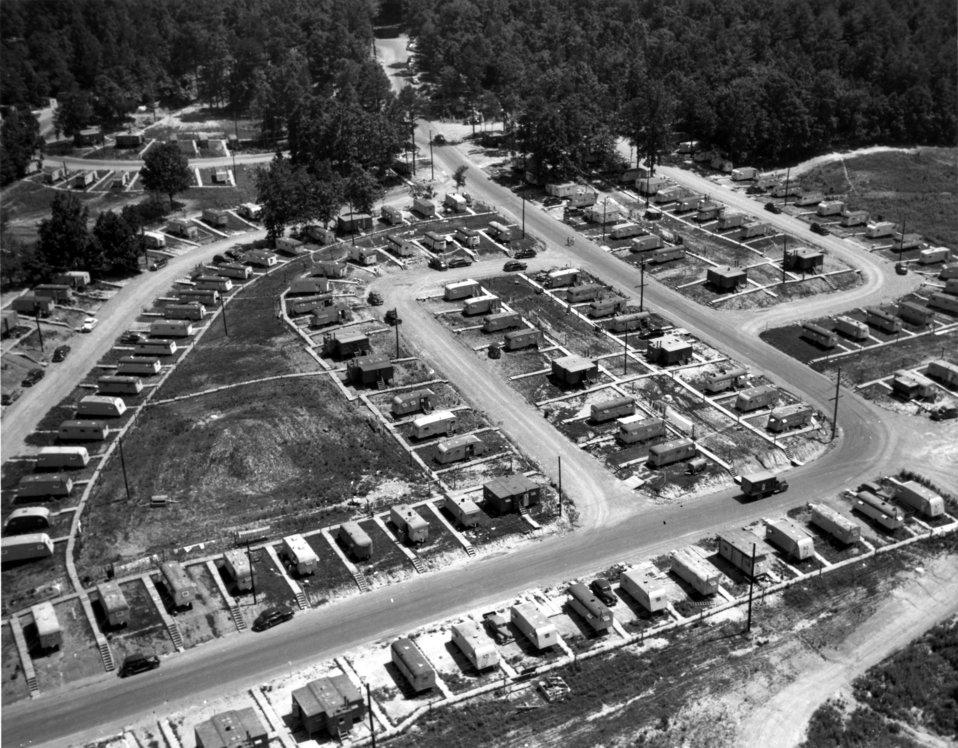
Aerial of Oak Ridge